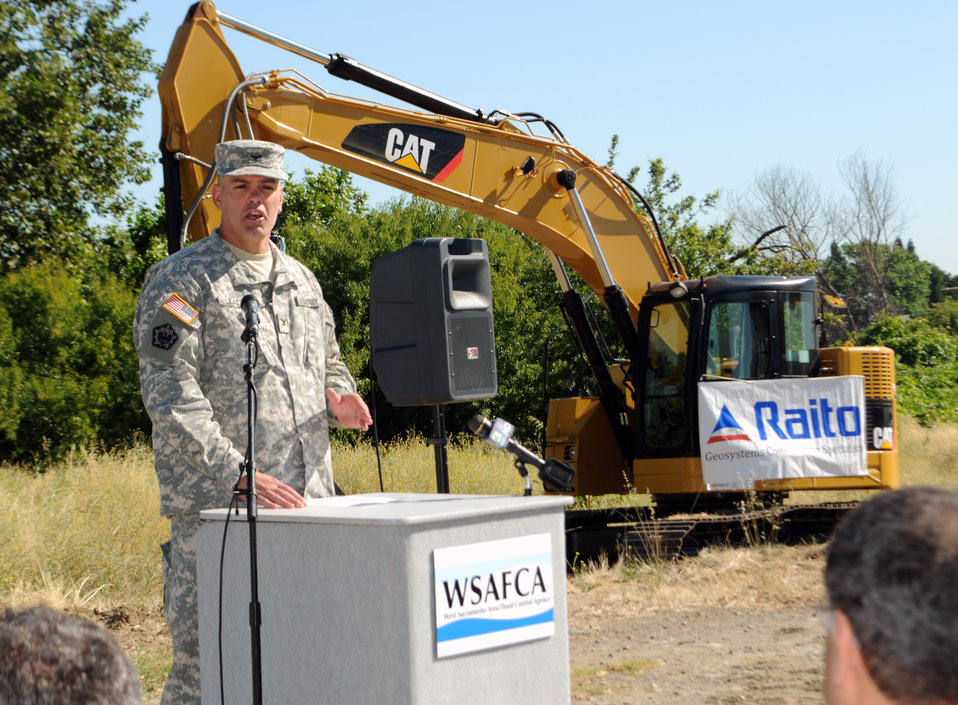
Col. Bill Leady commends WSAFCA

U.S. Army Corps of Engineers Sacramento District commander Col. Bill Leady commended West Sacramento Area Flood Control Agency for being “truly a model partner to work with” during a levee improvement project ground breaking ceremony in West Sacramento, Calif., July 19, 2011. Leady also thanked West Sacramento Mayor Christopher Cabaldon and other city officials for their patience, understanding, and perseverance as the city decides to move forward on the project without federal funding. “I can’t say enough how admirable it is that you all are building this project to such a high standard—without any promise of federal credit for this work,” Leady said. “Your commitment to public safety is commendable.”